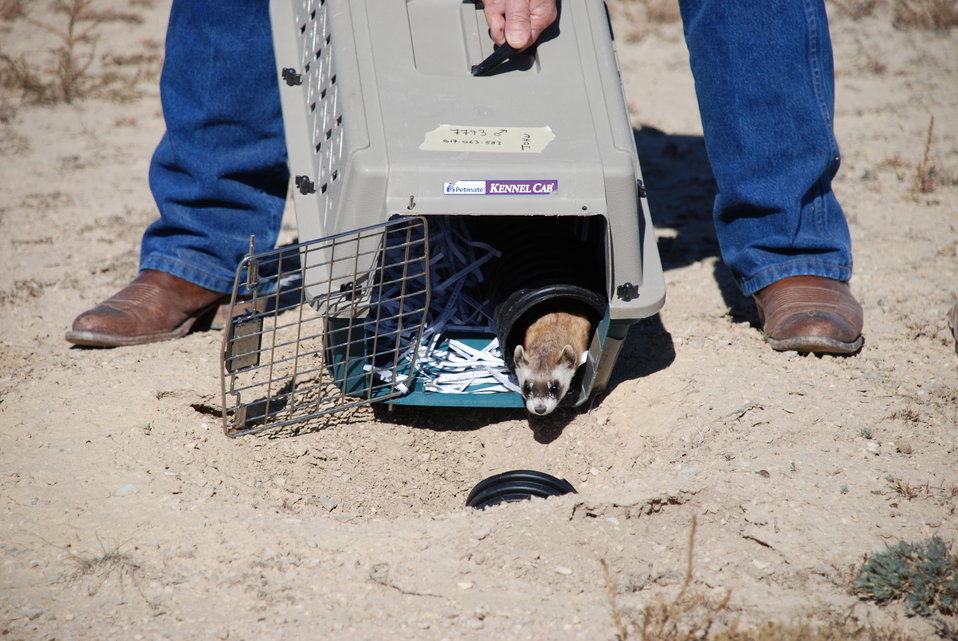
Black-footed Ferret Release

On Wednesday, October 30, 2013, thirty endangered black-footed ferrets were released onto cattle rancher Gary Walker's land, west of Pueblo, Colorado.

The release launched a potentially new way of preserving endangered species and was accomplished by way of a Safe Harbor Agreement (SHA). This SHA provides opportunities for private and Tribal landowners to volunteer their lands for reintroductions of this endangered species without affecting their land-use activities beyond mutually agreed-upon measures. It also extends these assurances to surrounding non-participating lands and other landowner interests. This SHA will be an important step in promoting the recovery of this iconic species.